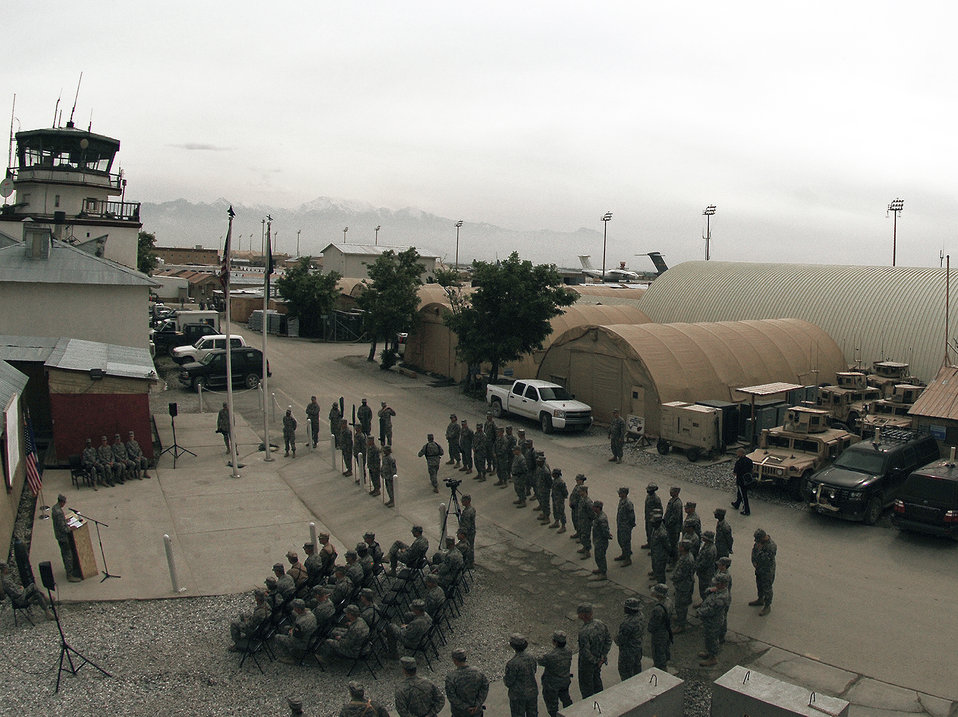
Bagram officials stand up 4 new squadrons

Col. James Reed addresses the crowd during an assumption of command ceremony May 5 at Bagram Airfield, Afghanistan. Four new units, the 655th, 755th, 855th and 955th Air Expeditionary squadrons, were stood up to provide support and oversight of more than 1,200 Airmen serving in more than 40 forward operating bases and camps throughout Afghanistan. Colonel Reed is the 755th Air Expeditionary Group commander.